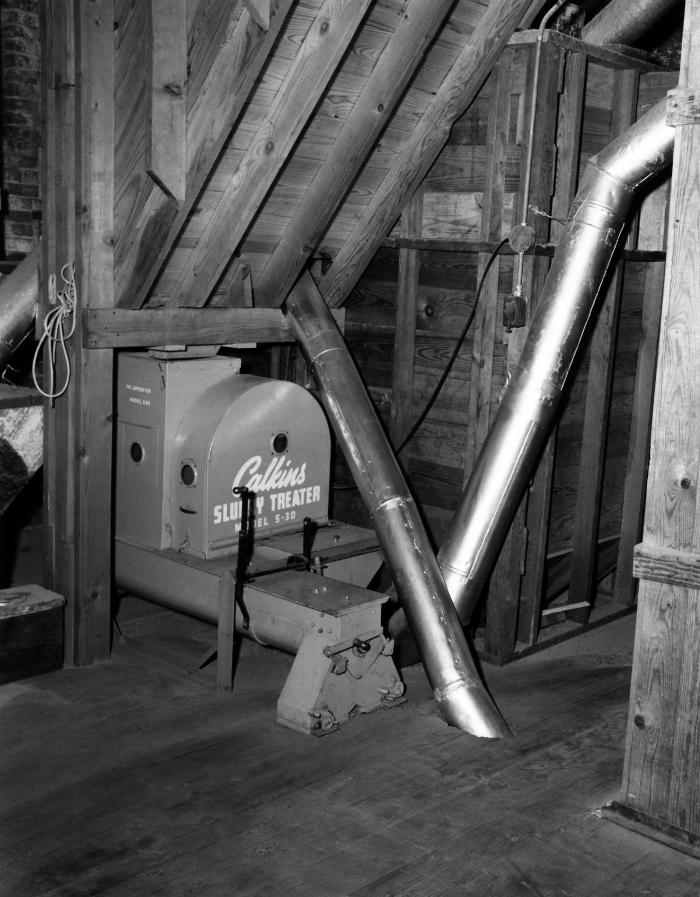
This October, 1951 photograph was provided by the Center for Disease Control's (CDC), National Institute for Occupational Safety and Health (NIOSH). The image depicted a 'Calkins Slurry Treater - Model 5-30', which was used to treat stored seed grain with methlymercury on an Oklahoma farm. During the 1950s and 1960s, mercury was used in agricultural settings as a fungicidal seed treatment in the form of methyl-mercury, and had been known to enter the human-inclusive food chain when farm-raised birds such as turkeys and phesants consumed mercury treated grains. The customery use of mercuric fungicides, has for the most part, been discontinued in the developed world, but may still be implemented in the underdeveloped world. This compound need not be ingested in order to impart its neurotoxic effects to humans, but may also be readily absorbed through the skin as well, with the nervous system being the site of its selective concentration.